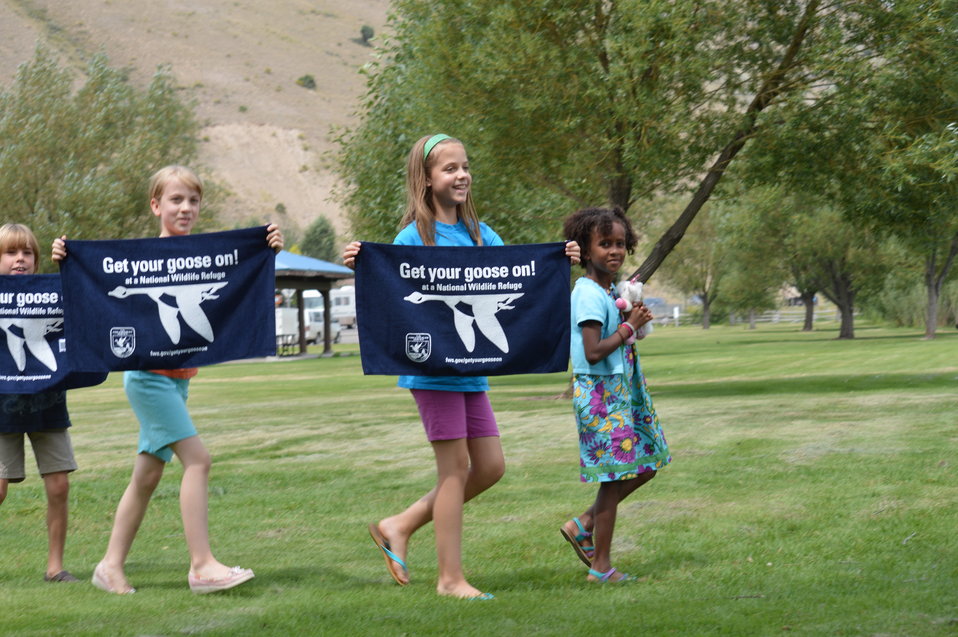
Get Your Goose On! - National Elk Refuge Style

On August 10, 2012 the U.S. Fish and Wildlife Service and Partners celebrated the 100 year anniversary of the establishment of the National Elk Refuge. In these photos, young attendees, along with Puddles the Blue Goose and the National Elk Refuge's mascot, showed us how to Get Your Goose On! with style.